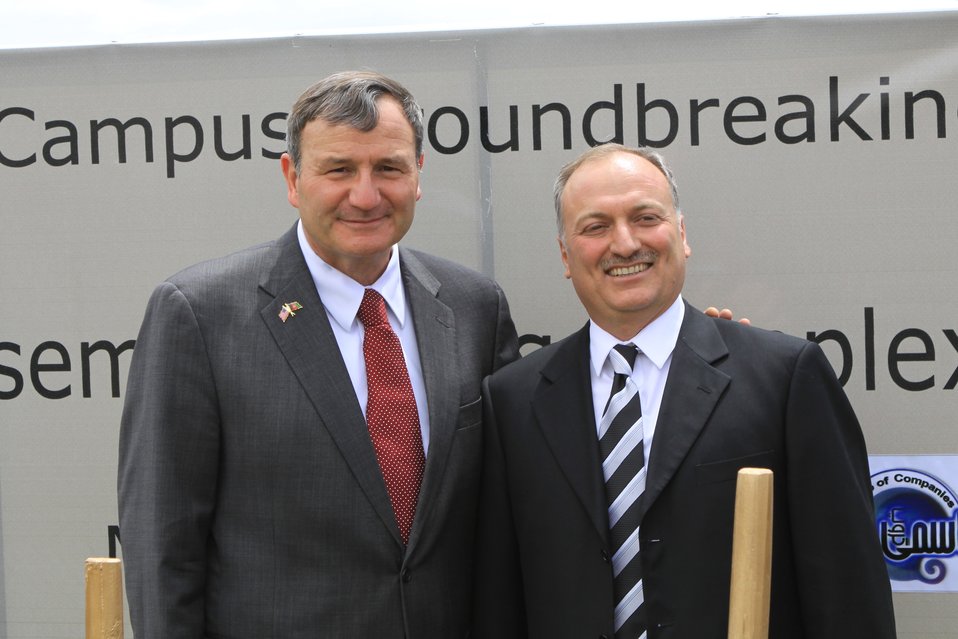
100526 AUAF Graduation 427